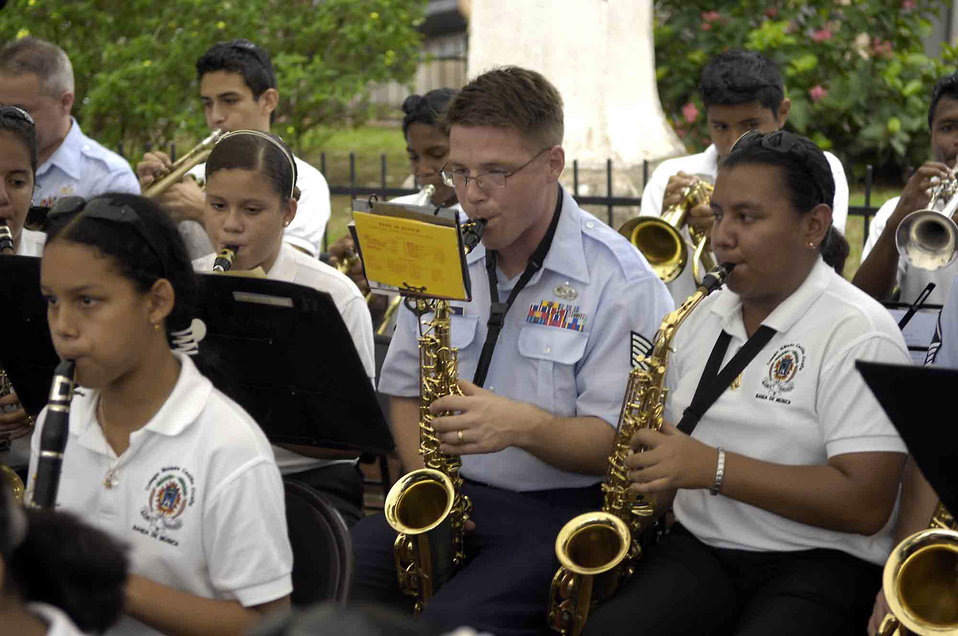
Jam session

Tech. Sgt. Jason Baedke performs with students from a Panama City school band during a special performance of